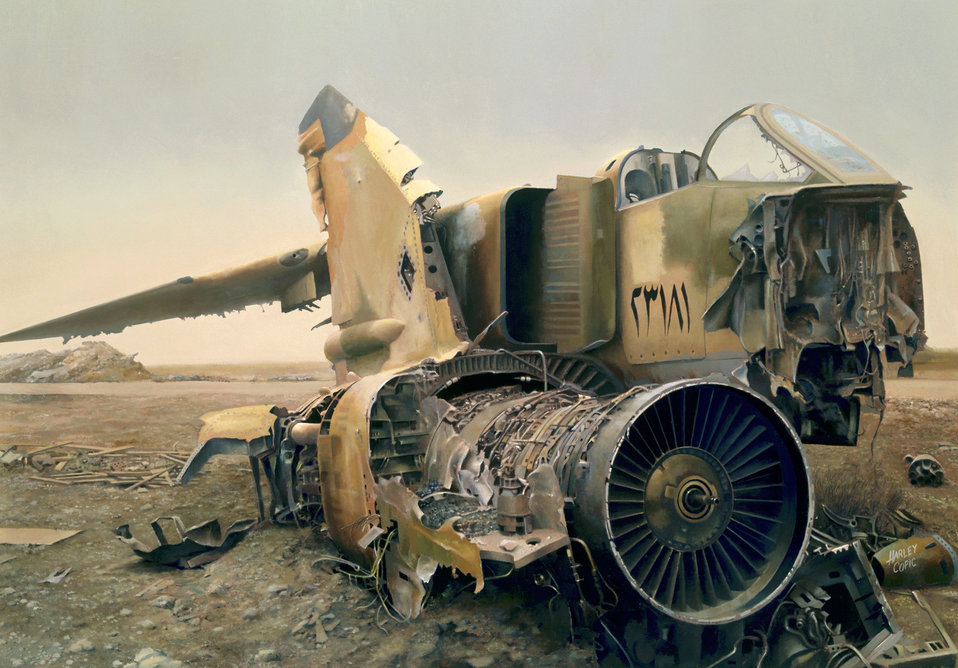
Air Force receiving OIF artwork

WASHINGTON --